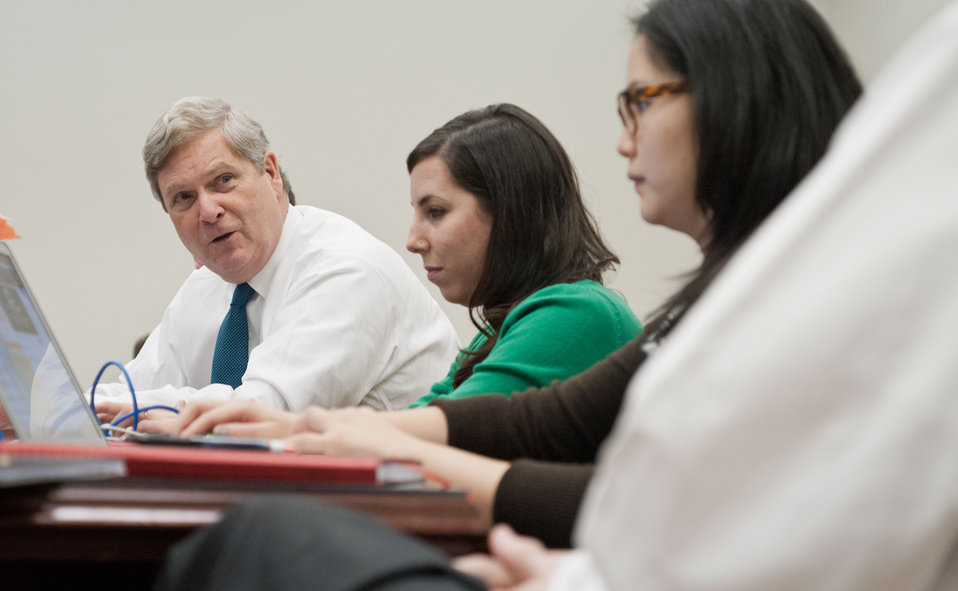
Agriculture Secretary Tom Vilsack (left) composes an answer, that will be posted for him, by New Media Content Specialist Rebecca Frank (center) and Deputy Press Secretary Stephanie Chan (right) and other staff, before hosting a live and online Virtual Office Hours session on Twitter, in Washington, D.C. on, Monday, December, 17, 2012. Online questions about the important role of rural America to the national and global economy, increasing agricultural opportunities in U.S. communities, and the importance of passing a five-year Farm Bill are addressed during this live Twitter chat. Some of the responses address food and nutrition, agricultural research, urban agriculture, bio-based products and how rural communities can get more involved in rural policy, to name a few. Questions were submitted live and in advance to the @USDA Twitter account using the hashtag #AskUSDA.